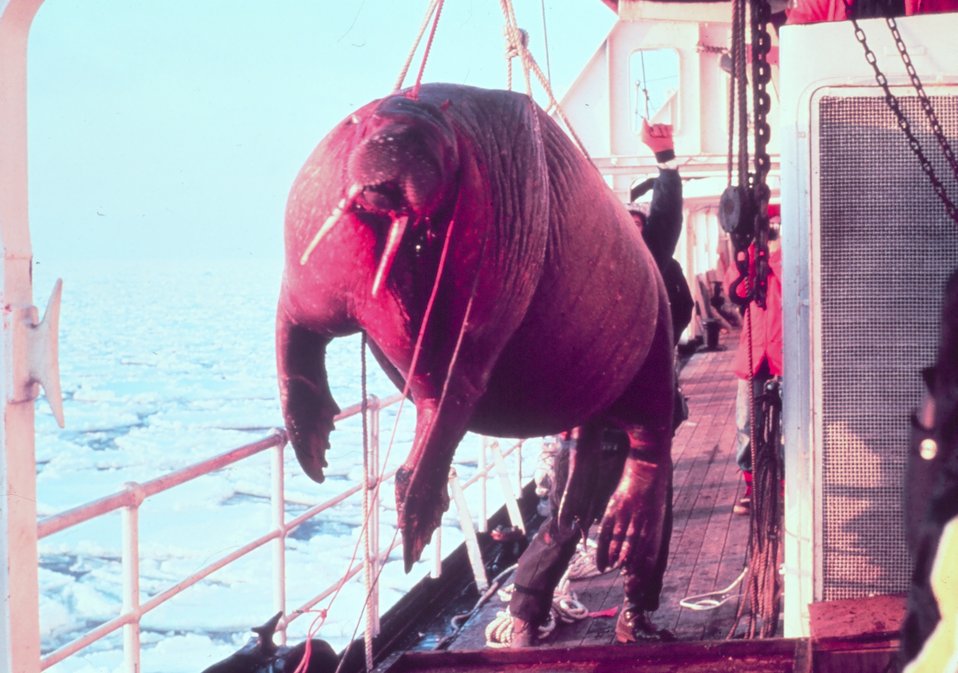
Dead walrus - Odobenus rosmarus divergens -found floating in sea being taken on board ship for studying.